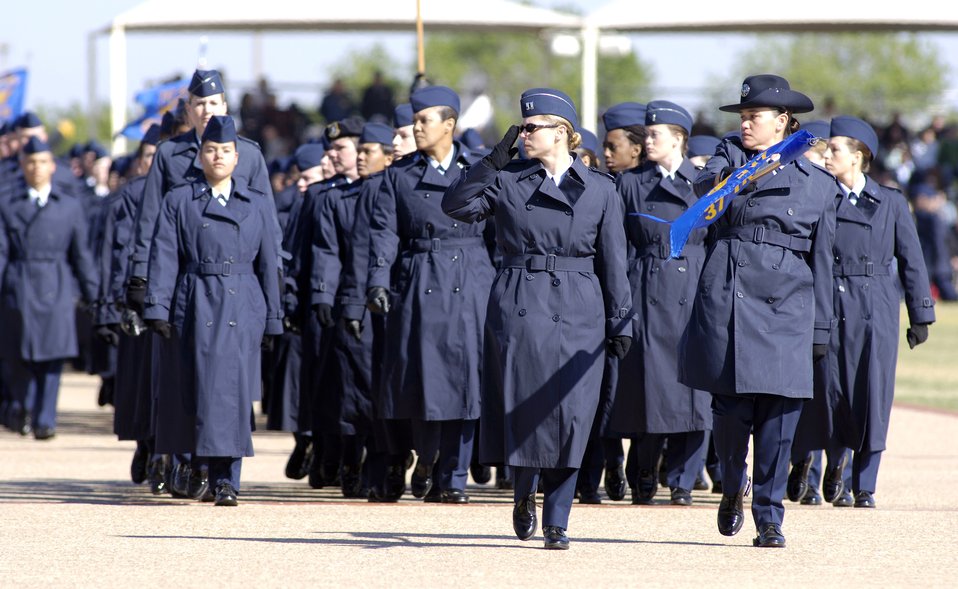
Profession of Arms

A formation of more than 30 women, commanded by Capt. Trasi Migrala, lead the parade of 16 basic trainee flights, Friday, March 24, 2006, at Lackland Air Force Base, Texas, commemorating the legacy of women who served in the Women's Air Force and all women who have shared in the profession of arms.